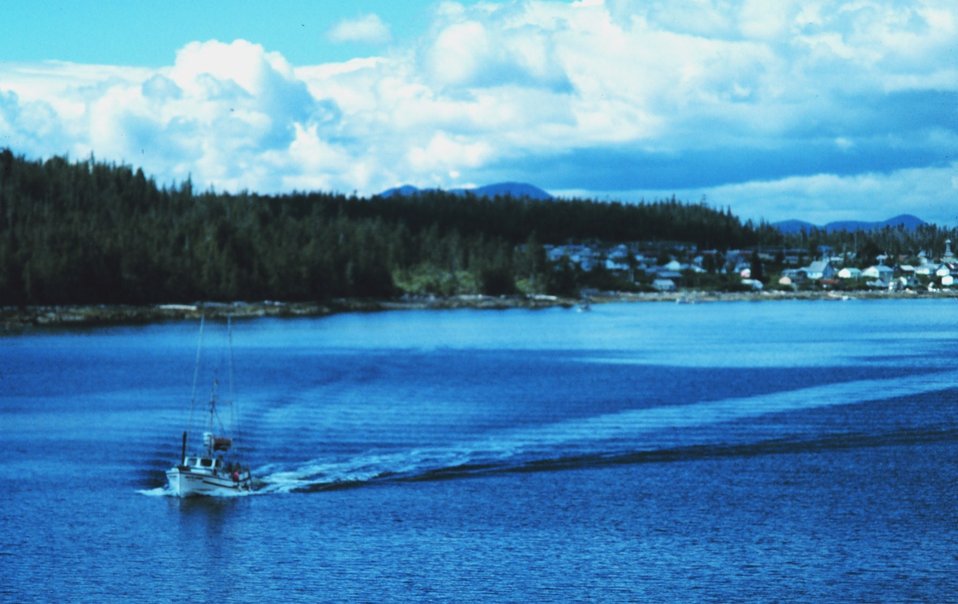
Taken from the NOAA Ship SURVEYOR